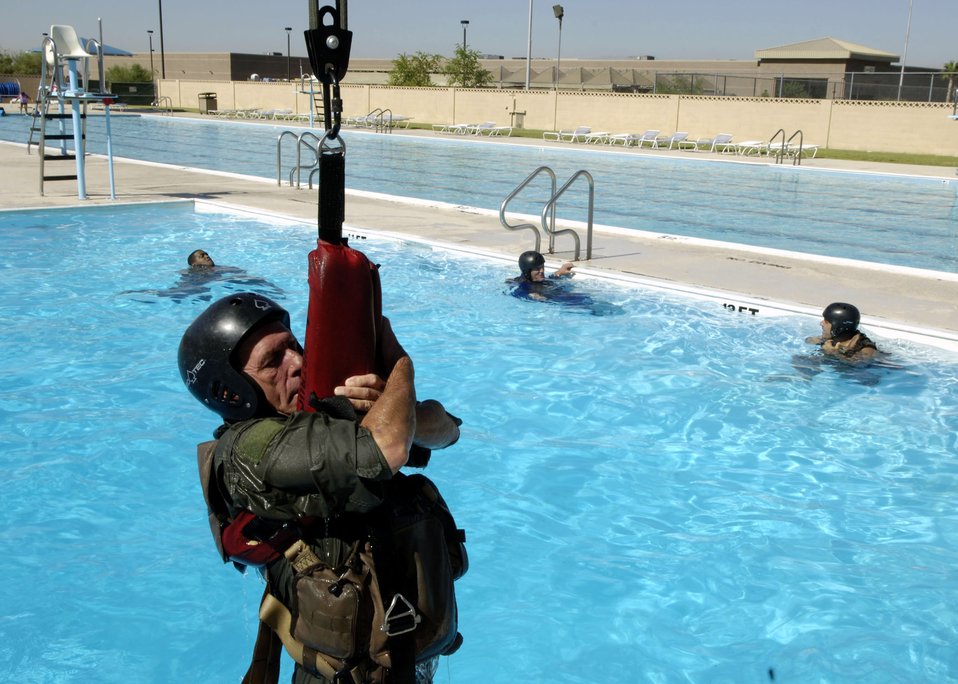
Practicing to be safe in the water

Army Chief Warrant Officer Ron Stone is hoisted to a pool platform during a simulated helicopter rescue. The water survival training was being conducted by Air Force survival, evasion, resistance and escape, or SERE, instructors at Nellis Air Force Base, Nev. The Army National Guardsmen, an OH-58 maintenance officer, was taking his annual water survival training.